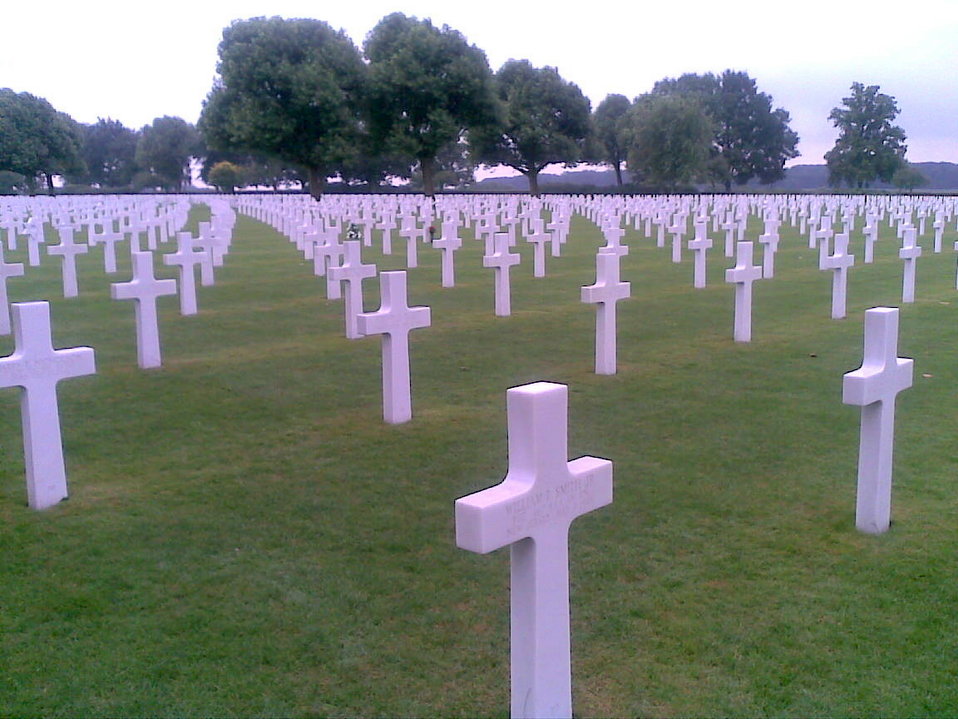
Deutsch: Netherlands American Cemetery, Gräberreihen